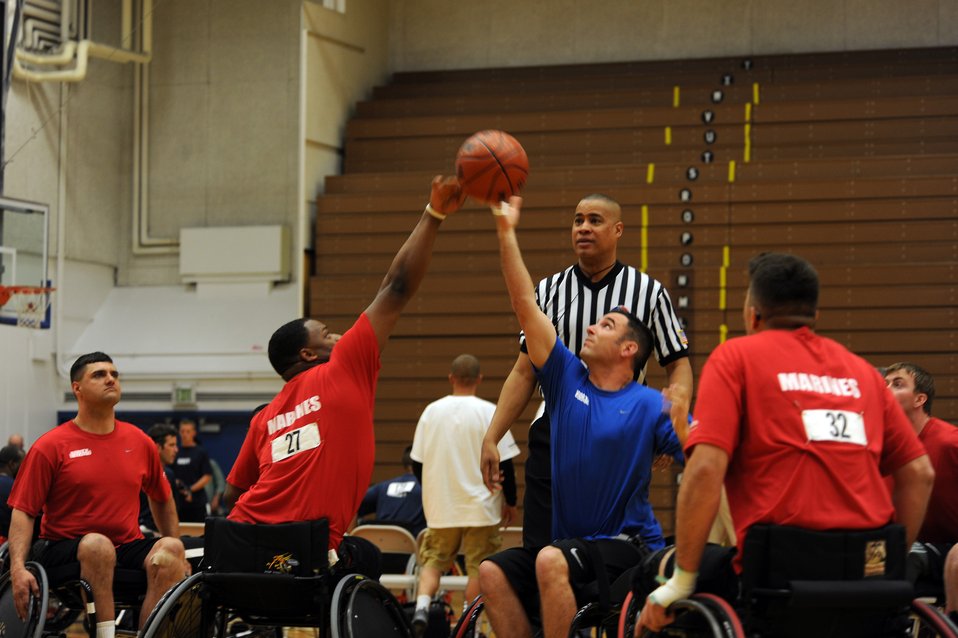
Warrior Games Team Air Force Basketball

Staff Sgt. Christopher D'Angelo reaches for the basketball during tip off against the Marines in wheelchair basketball May 11, 2010, during the Warrior Games held at the Olympic Training Center, Colorado Springs, Colo. Warrior Games competition began May 10 and finishes on May 14.